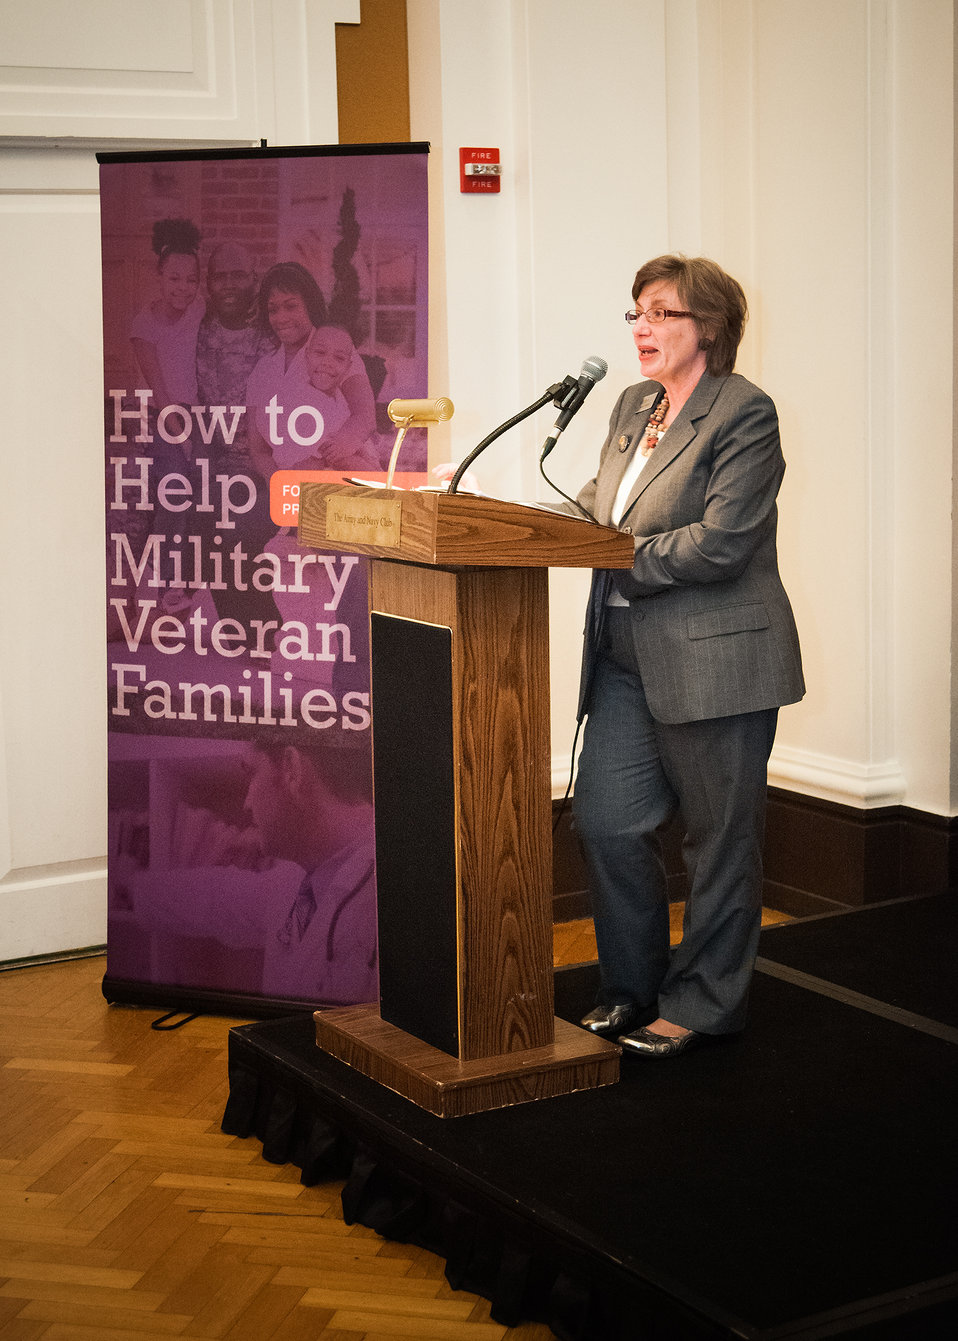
Joyce Raezer, Executive Director National Military Family Association and Mistress of Ceremonies introduced the guest speakers at the United States Department of Agriculture (USDA) and Department of Defense (DOD) jointly launch event for the 'How to Help Military and Veteran Families' - a series of publications produced jointly by the USDA, National Institute of Food and Agriculture (NIFA) and DOD at the Army-Navy Club in Washington, DC, Monday, April 15, 2013.